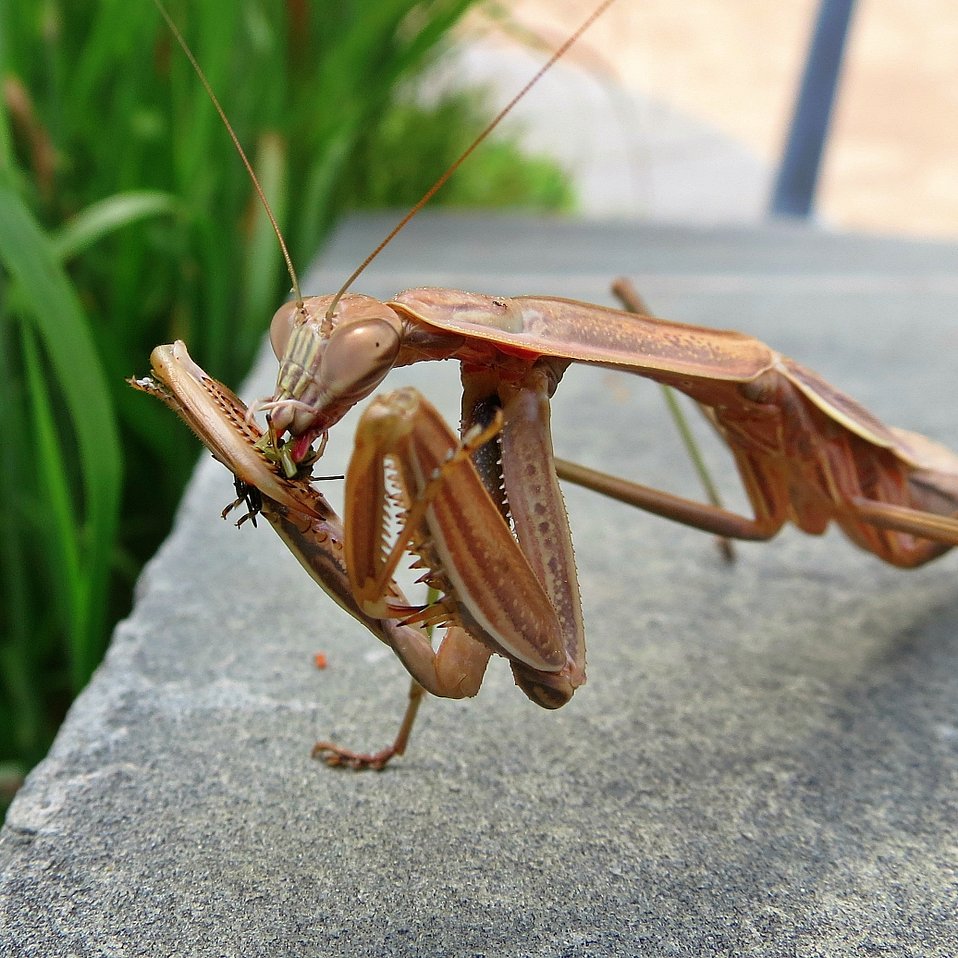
A hungry praying mantis